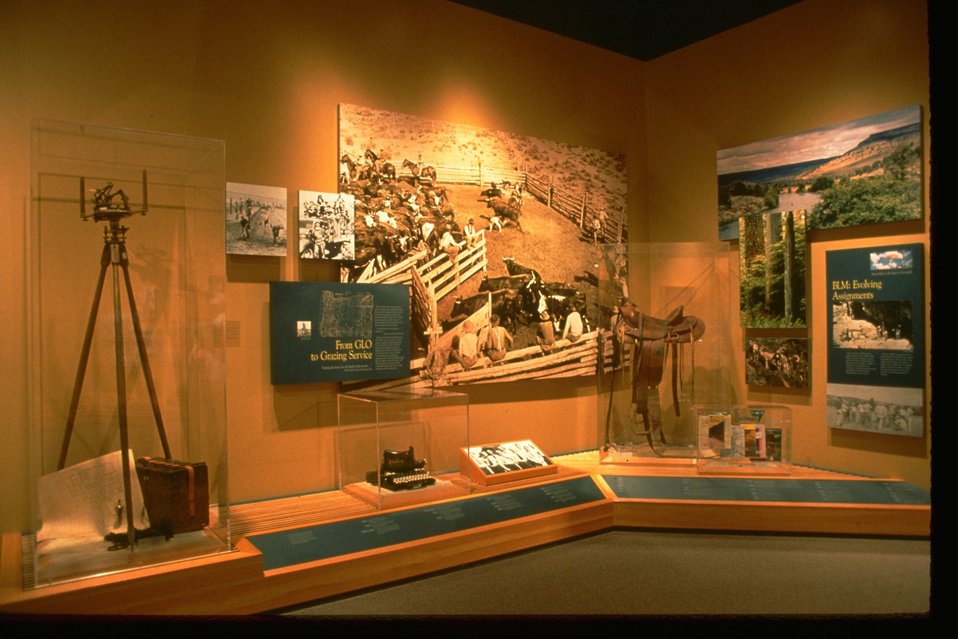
Exhibits at the NHOTIC.